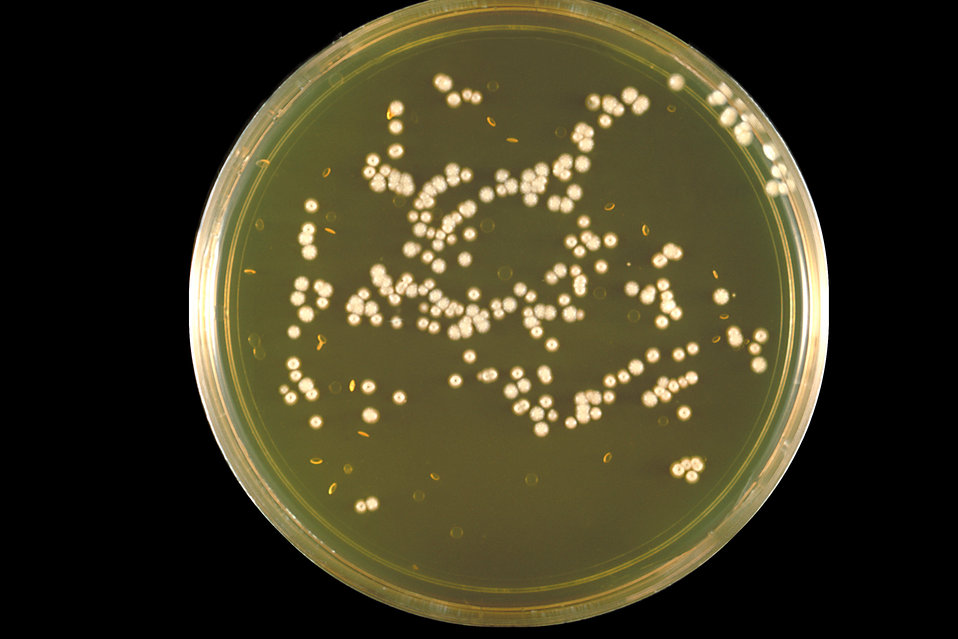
This is a SABHI agar plate culture of the fungus Sporothrix schenckii grown at 20�C.